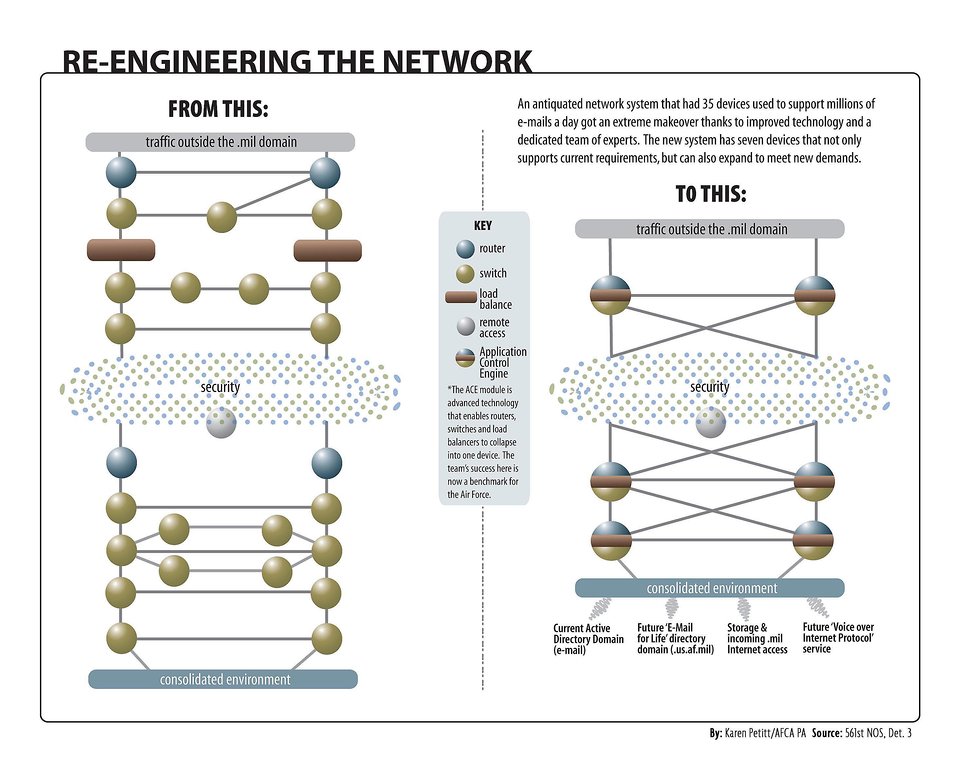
Team re-engineers network environment

Graphic comparing old and new improved network environment paths.